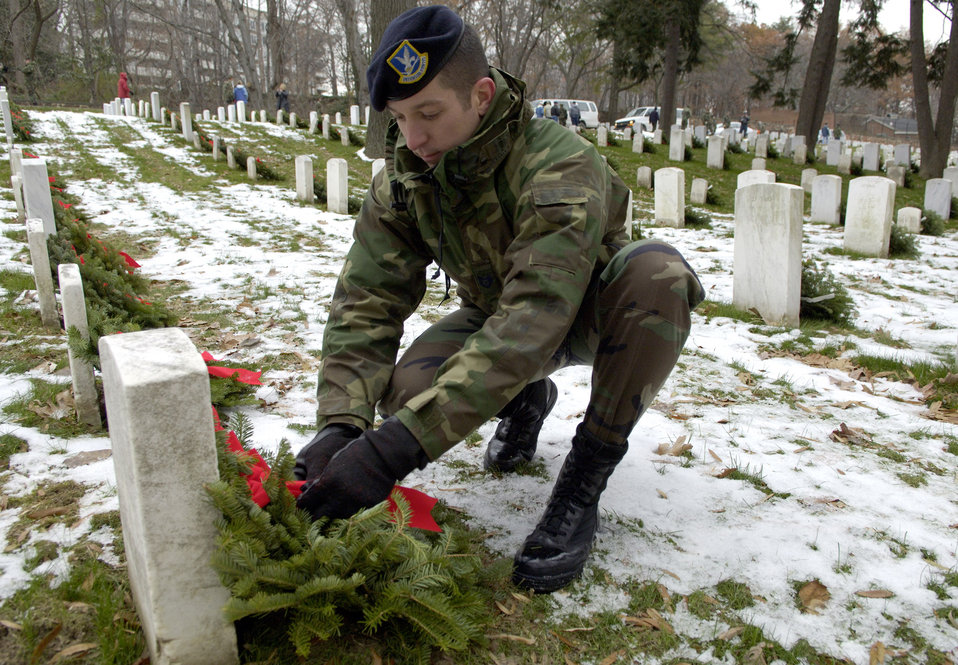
Honoring heroes

ARLINGTON, Va. (AFPN) -- Tech. Sgt. Scott Glassic places a wreath on a headstone. He was one of hundreds of volunteers who gathered at Arlington National Cemetery to place more than 5,000 donated Christmas wreaths. The 14th annual wreath laying event is the result of Worcester Wreath Company's owner Morrill Worcester's, childhood dream of doing something to honor those laid to rest in the national cemetery.